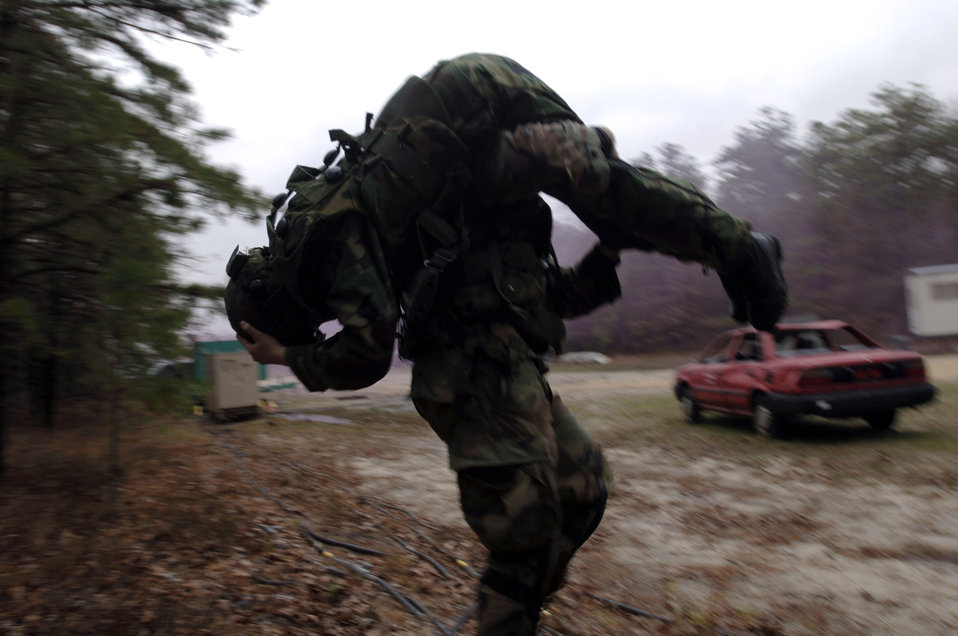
Air Force training makes Airmen safer, more aware

Senior Airman Jonathan Britton carries Staff Sgt. Isaac Ball to safety while taking fire from simulated insurgents during the Contingency Skills Training course at the Air Mobility Warfare Center in Fort Dix, N.J., Nov. 14.